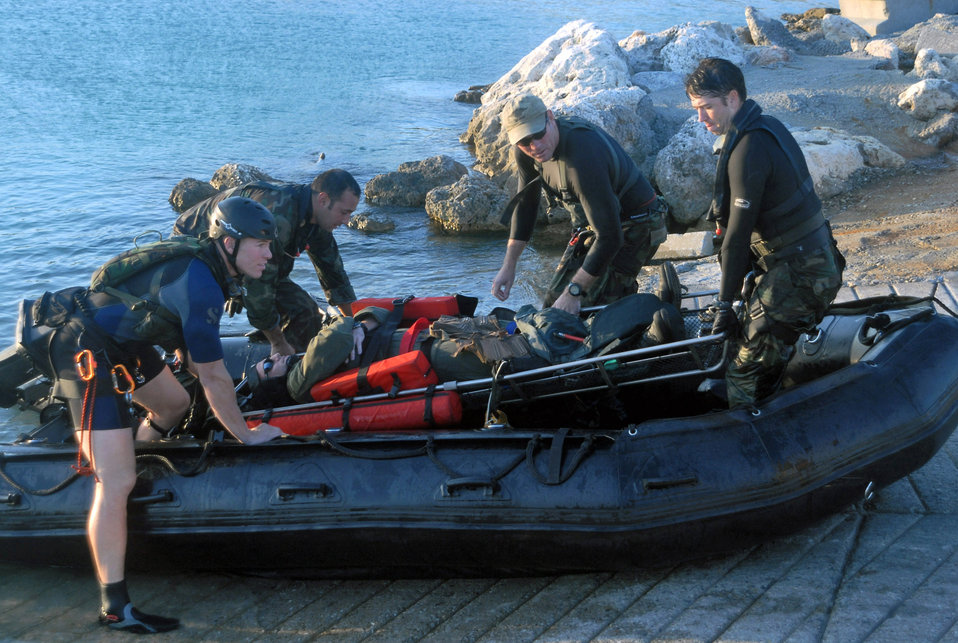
Water rescue

Members of the 31st Rescue Squadron prepare to transport Capt. Derek Flynn to medical facilities at Kadena Air Base, Japan, after pulling him out of the waters off the coast of Okinawa Oct. 24. Captain Flynn was placed in the water as part of a Kadena AB survival, evasion, resistance and escape exercise.